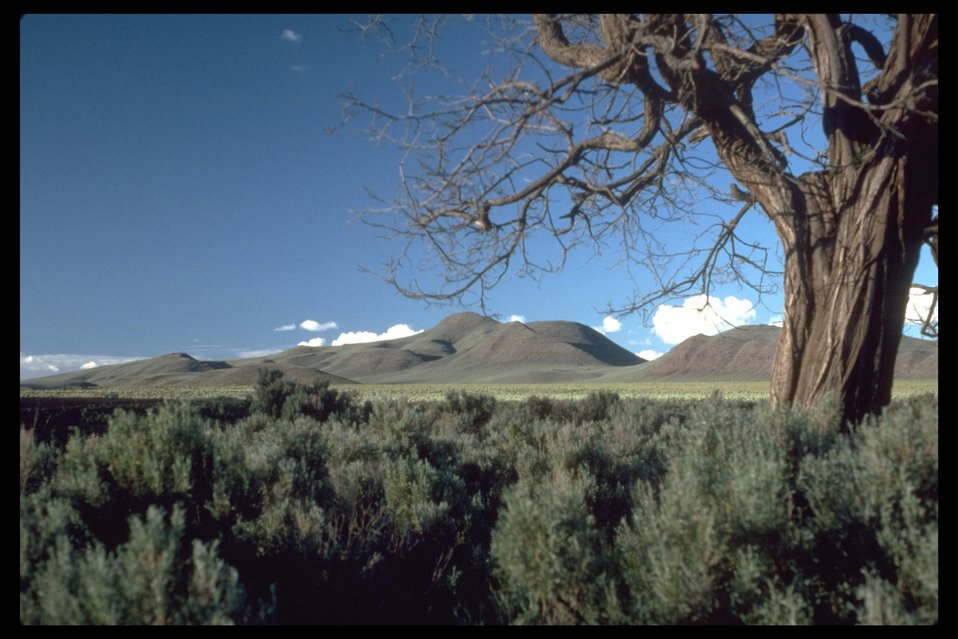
Scenic shot of an old Cottonwood tree in the West Peak WSA. (2-72J)